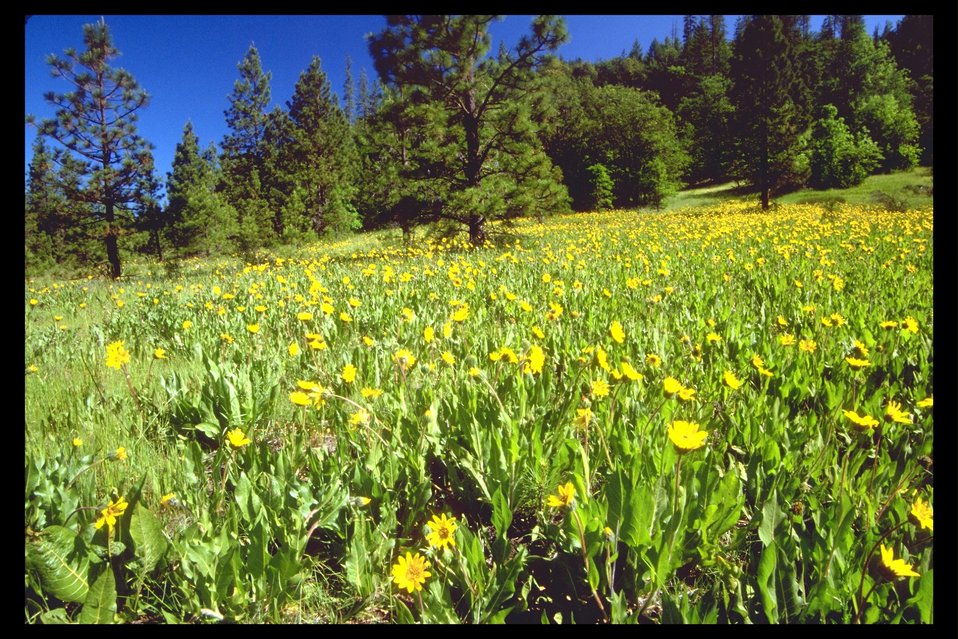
Balsam Root (Balsamorhiza deltoidea) found in Shady Cove.